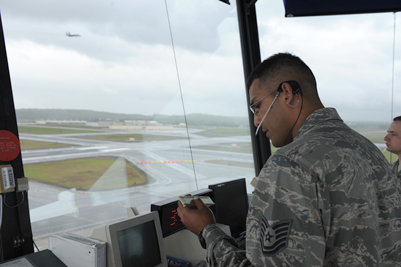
Controllers step it up a notch during Northern Edge

Tech. Sgt. Jorge Riviera issues flight clearances for fighter aircraft preparing to launch in support of Exercise Northern Edge 11 June 14, 2011, at Joint Base Elmendorf-Richardson, Alaska. Northern Edge is the largest military training exercise in Alaska and is designed to prepare joint forces to respond to crises throughout the Asia-Pacific region.